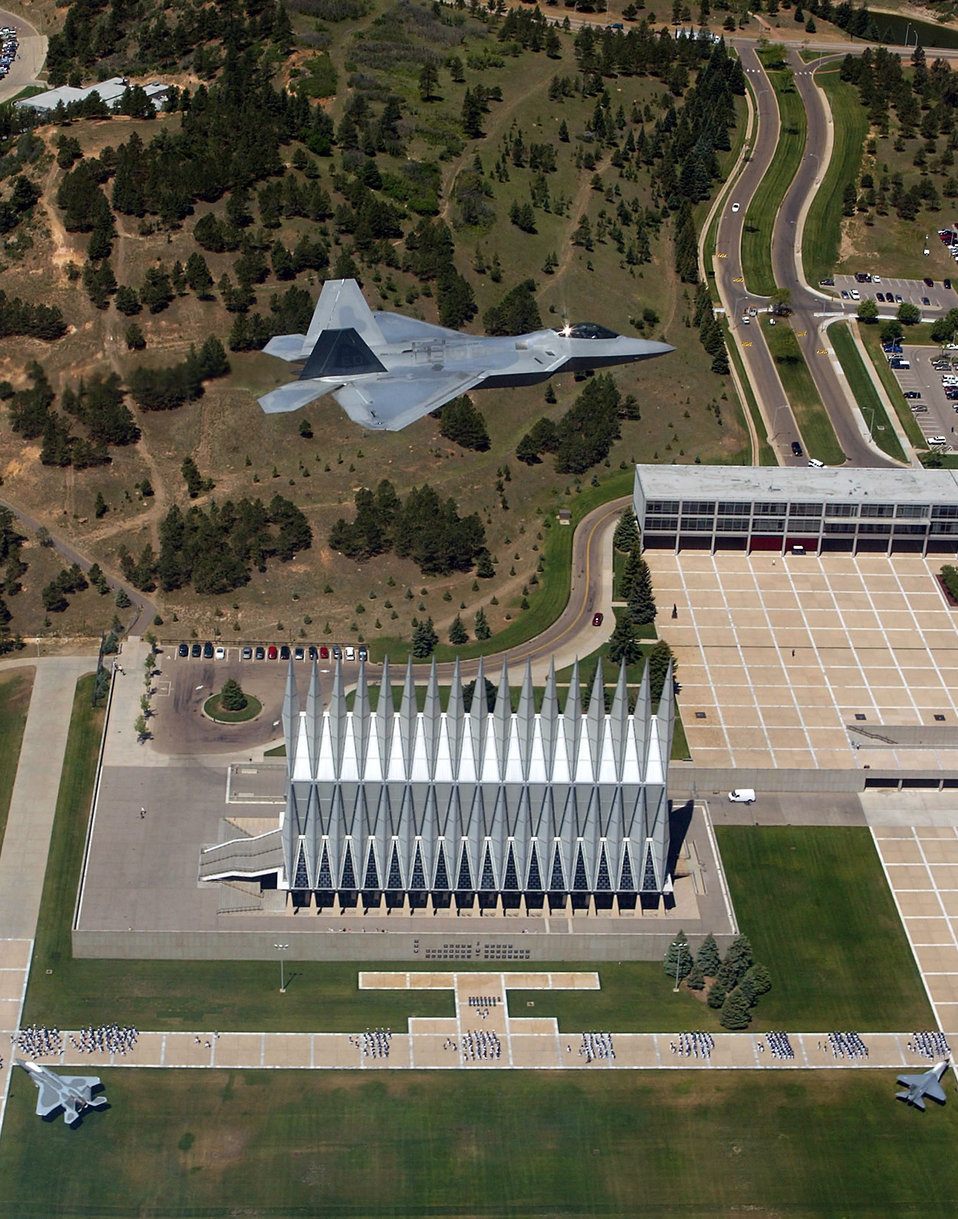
Raptor moment

U.S. AIR FORCE ACADEMY, Colo. -- An F/A-22 Raptor soars over the grounds here June 1. This flight was flown by Lt. Col. Dawn Dunlop, an F/A-22 test pilot and 1988 academy graduate, in support of the Class of 2004's graduation parade. Colonel Dunlop and the Raptor are from Edwards Air Force Base, Calif.